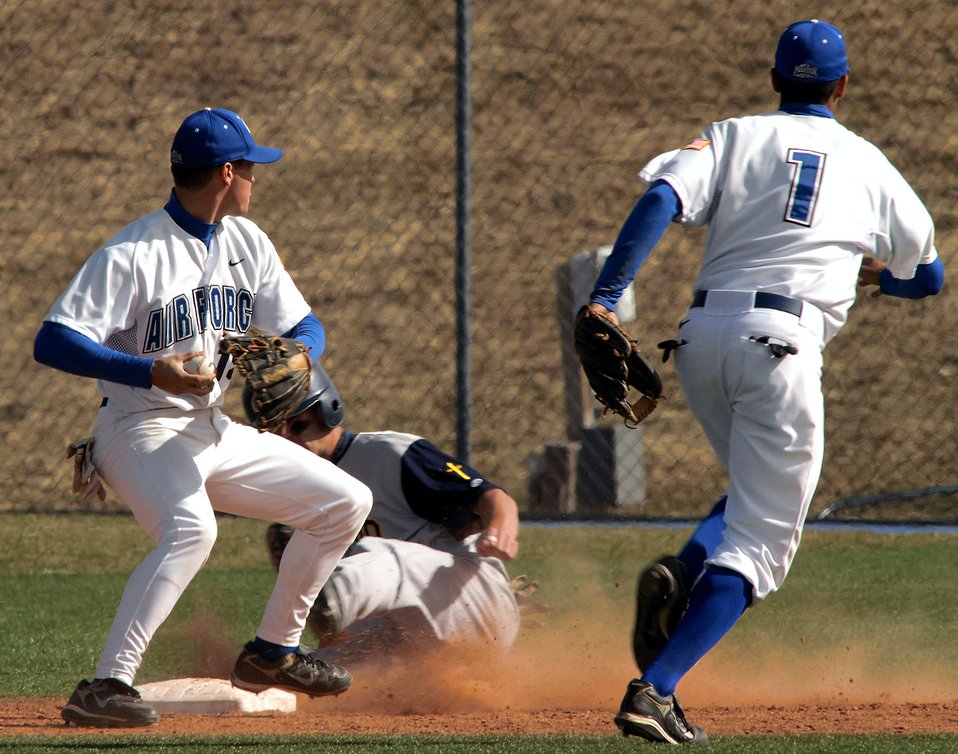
You're out!

Freshman second baseman Nathan Carter goes for the double play as the Falcons rallied to a 10th inning 9-8 win against Colorado Christian at Falcon Field in Colorado Springs, Colo. Carter went 1 for 5 as Air Force tallied 12 hits and did not commit an error in the field for the day.